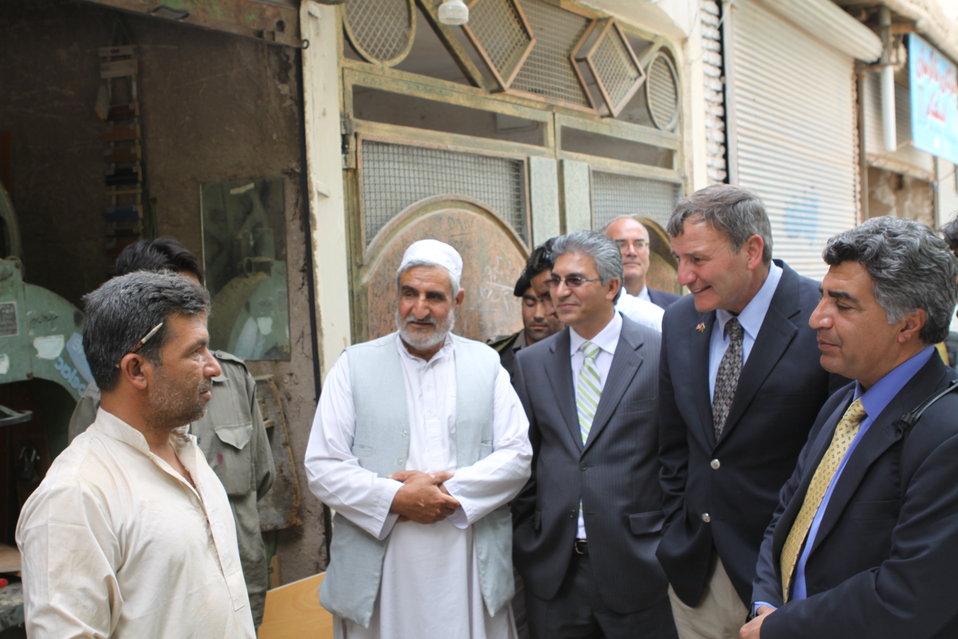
100525 Hirat Marble Conference 695